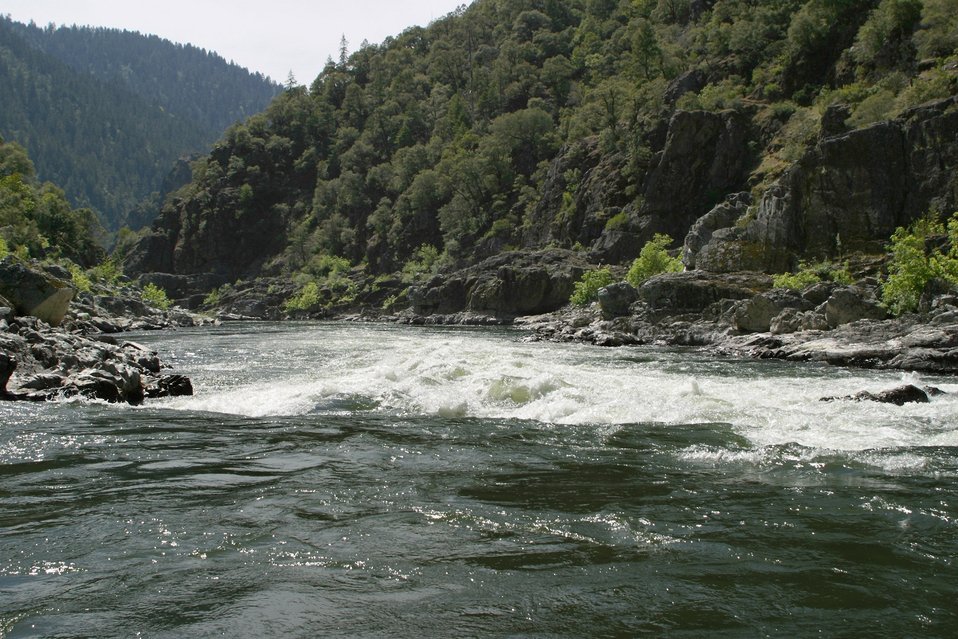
Wild section of the Rogue River from Grave Creek to Foster Bar. 3100 cfs at Grants Pass and 5300 at Agness.